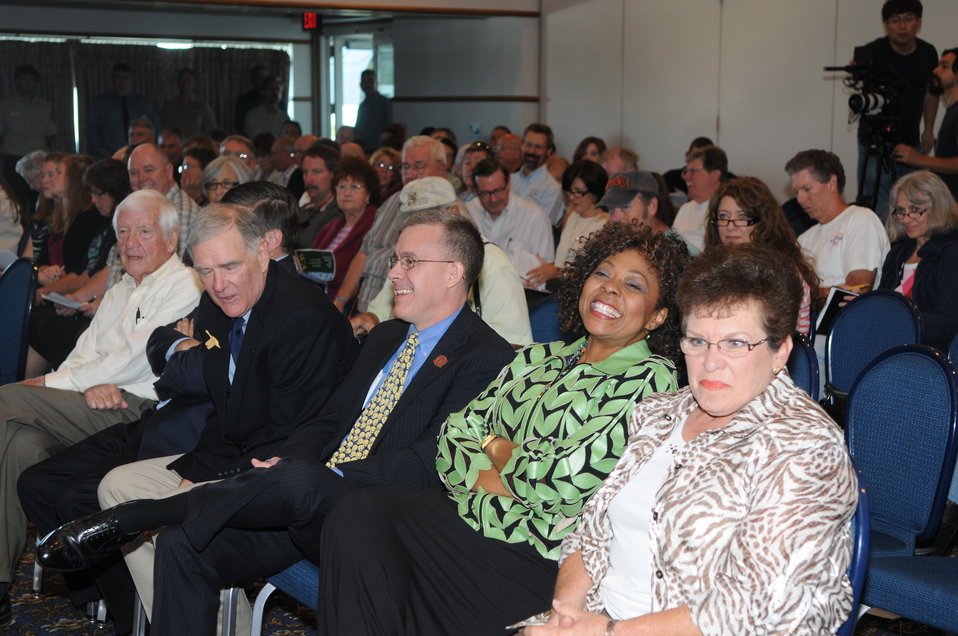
Judges await introduction during opening ceremony.